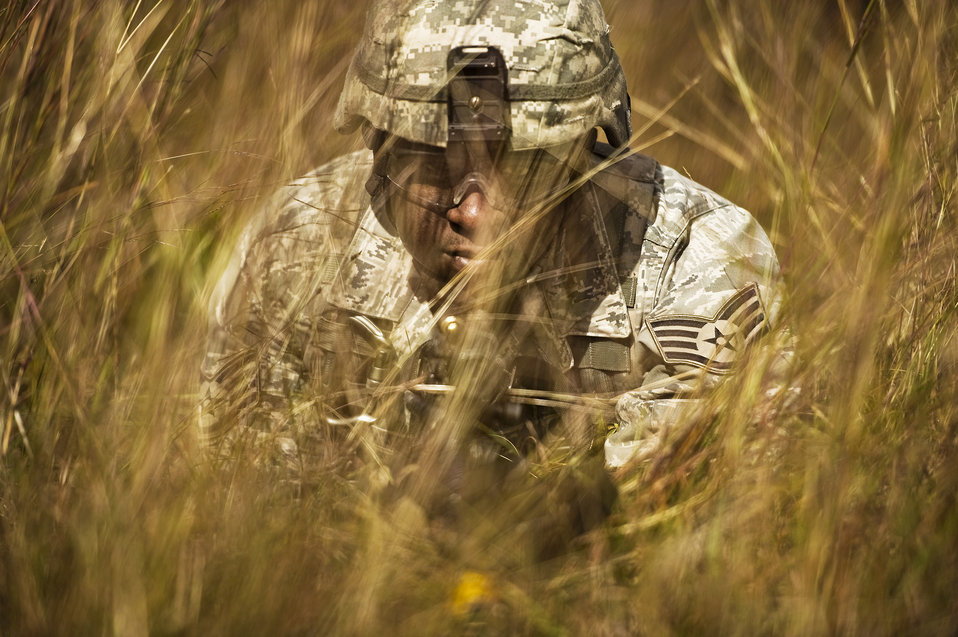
Defense at the ready

Staff Sgt. Alfonte Thomas provides security during a dismounted patrol while attending the Combat Leadership Course at Camp Bullis, Texas, Nov. 9, 2010. Airmen attending the course gain leadership experience from classroom and field training.